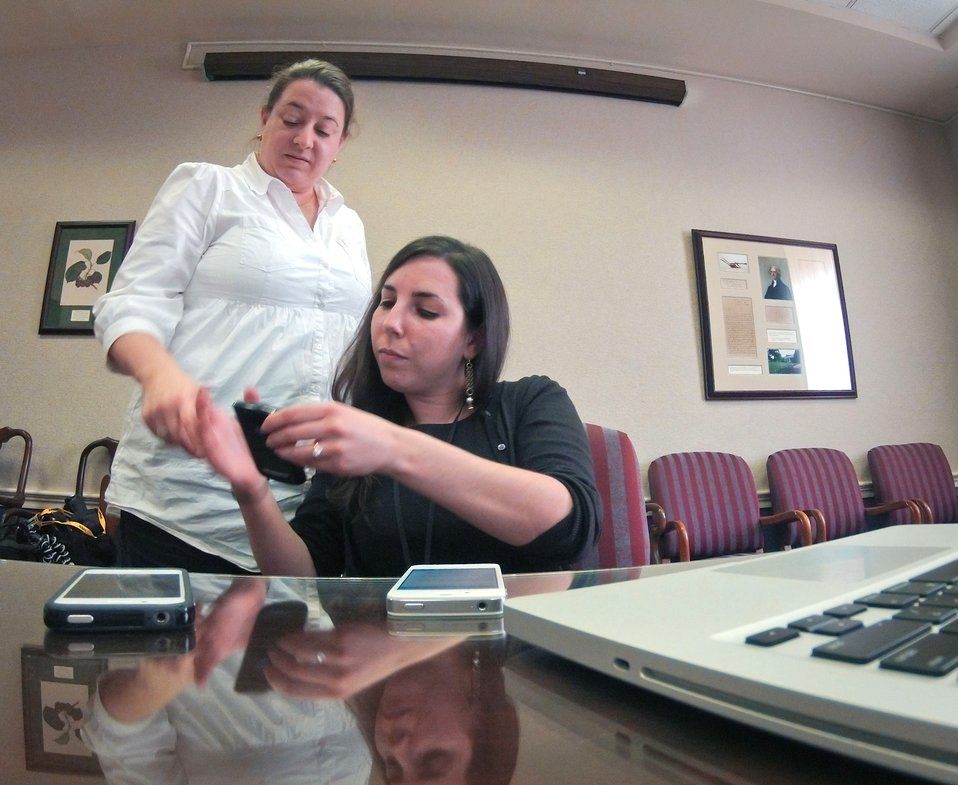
Agriculture Senior Advisor to the Secretary Sarah Bittleman (left) and Office of Communications Public Affairs Specialist for Web Content Rebecca Frank (right), monitor incoming and outgoing tweets during the first Virtual Office hours 'Twitter' session with Agriculture Secretary Tom Vilsack at the U.S. Department of Agriculture in Washington, D.C., on Thursday, April 4, 2012.